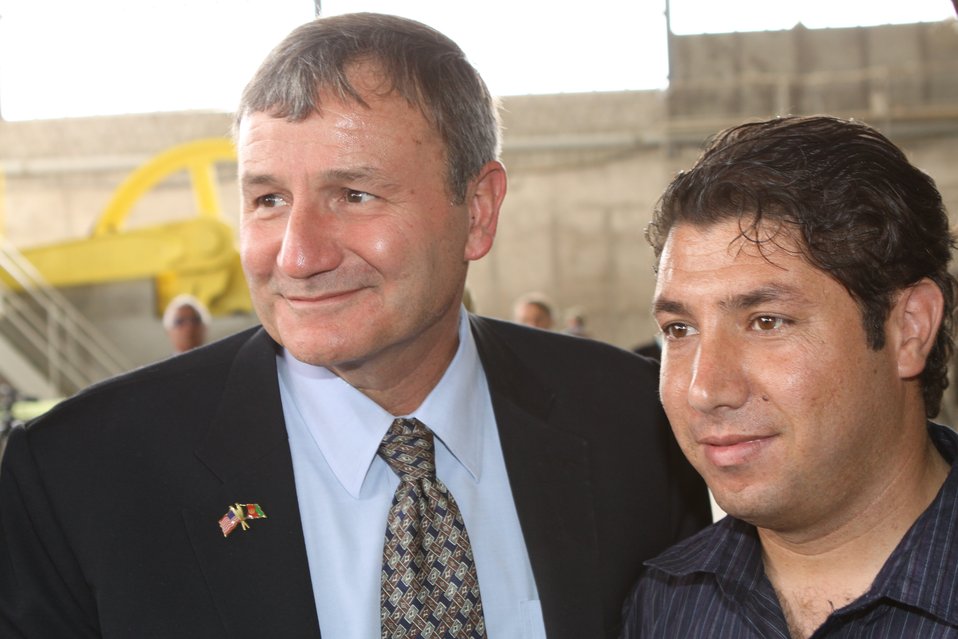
100525 Hirat Marble Conference 380